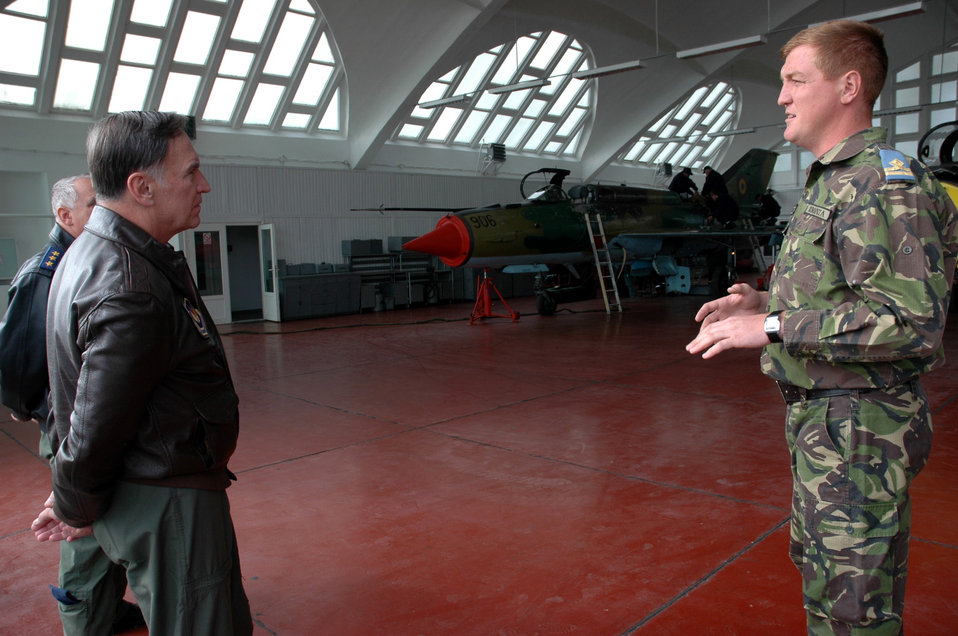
COMUSAFE builds on U.S.-Romania relationship

Gen. Tom Hobbins (left) receives an orientation briefing at a maintenance hangar from Romanian First Lieutenant Peceta during a visit to Fetesti Air Base, Romania, Oct. 20. General Hobbins is the U.S. Air Forces in Europe commander.